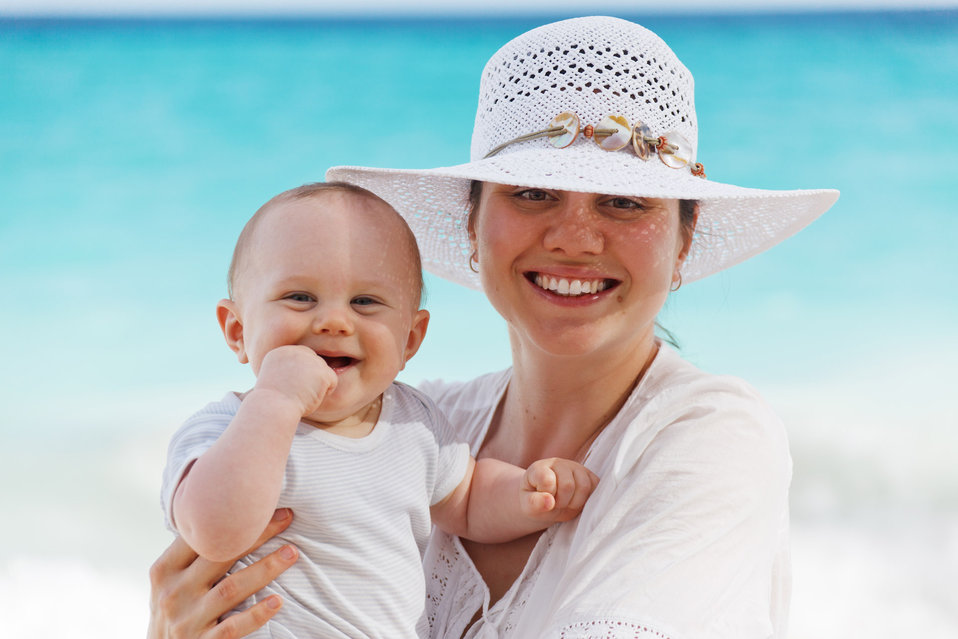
Mother and baby on the beach

Portrait of a mother and baby on the beach with beautiful sea in the background.